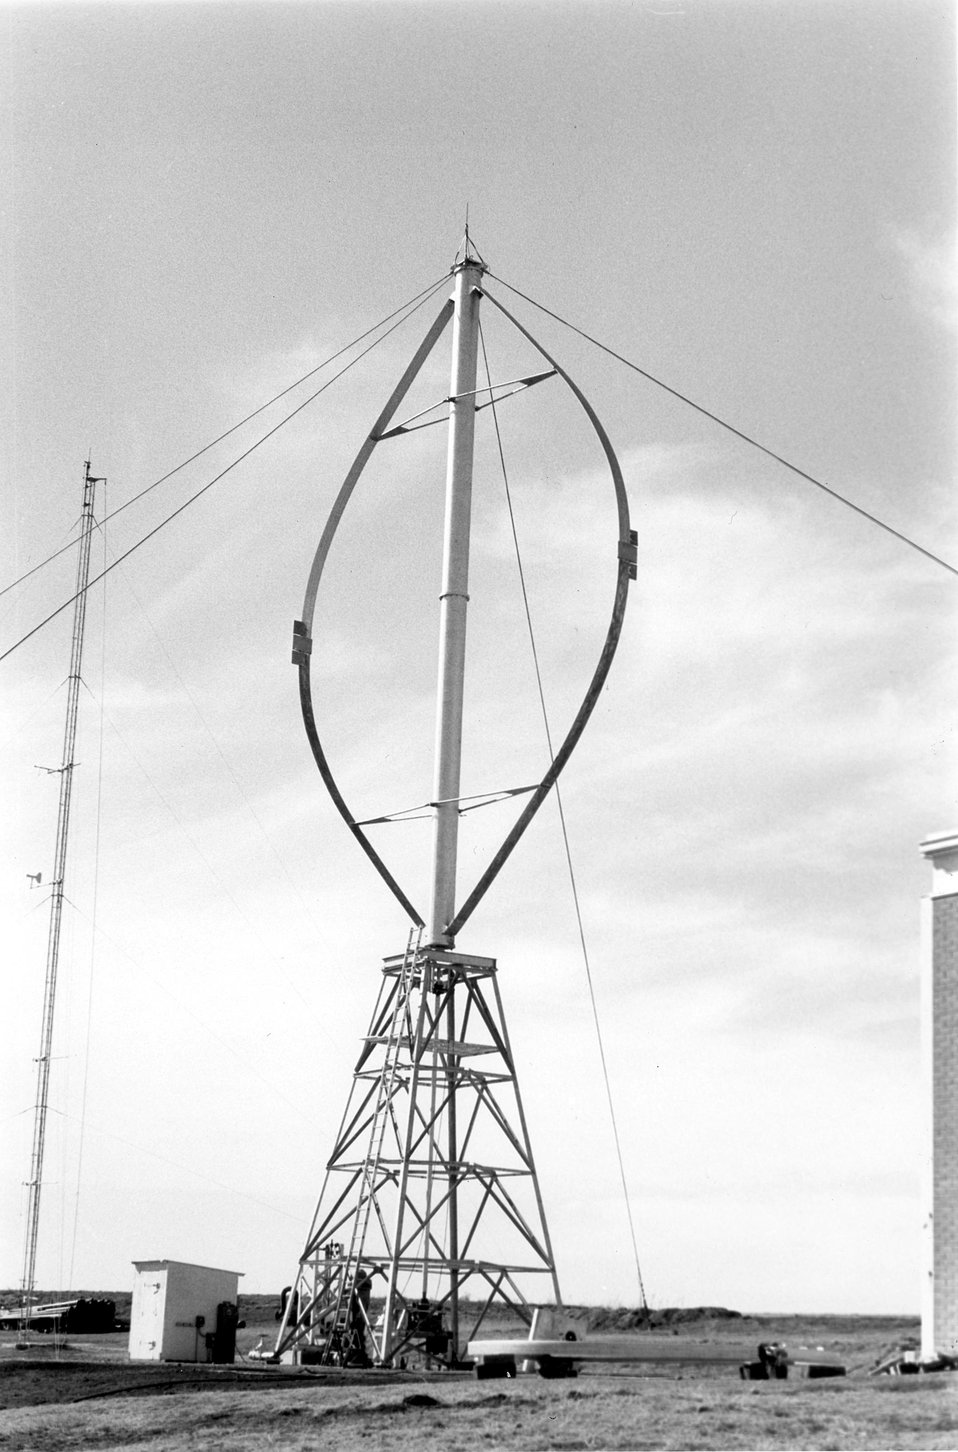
A 55-foot vertical axis wind turbine is being used to help pump water for crop irrigation in a Texas experiment. c. 1978